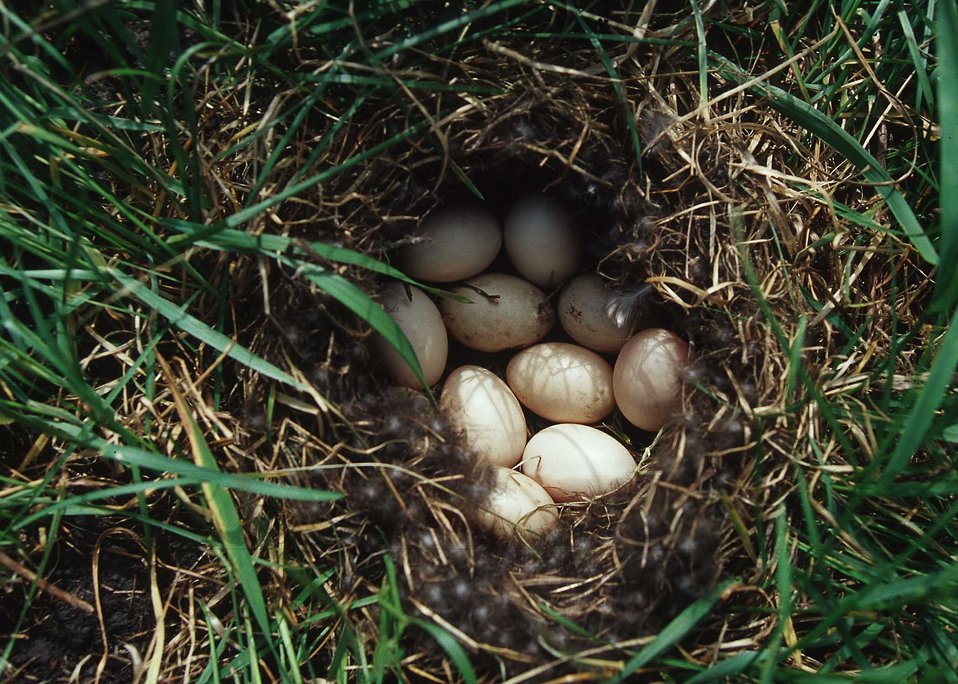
Nest located on land where NRCS has provided technical assistance to landowners in the prairie pothole region of northeastern South Dakota.